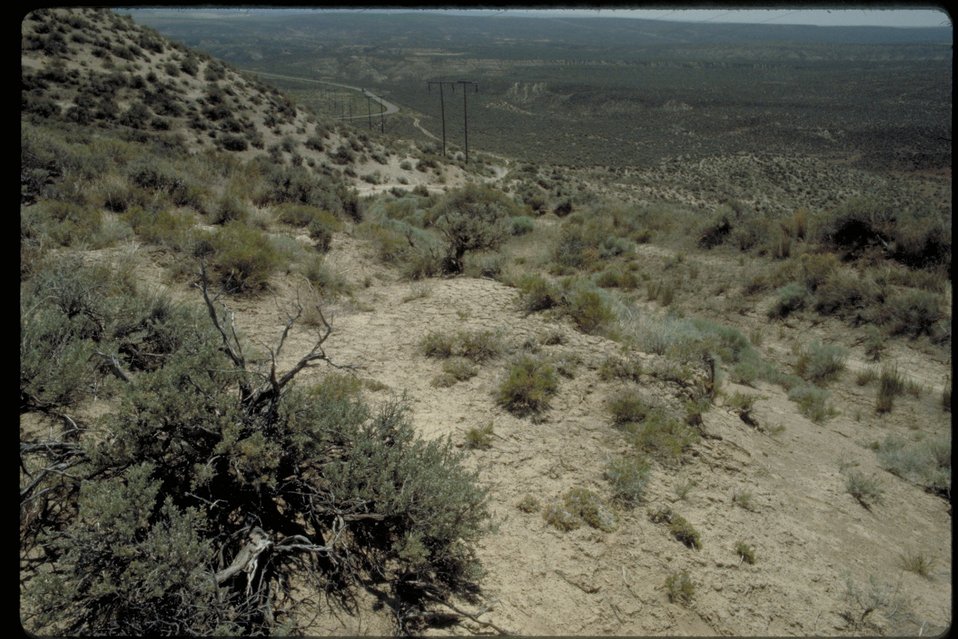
Oregon Trail west of Salmon Falls Cultural resource Historic area LSRD Lower Snake River District